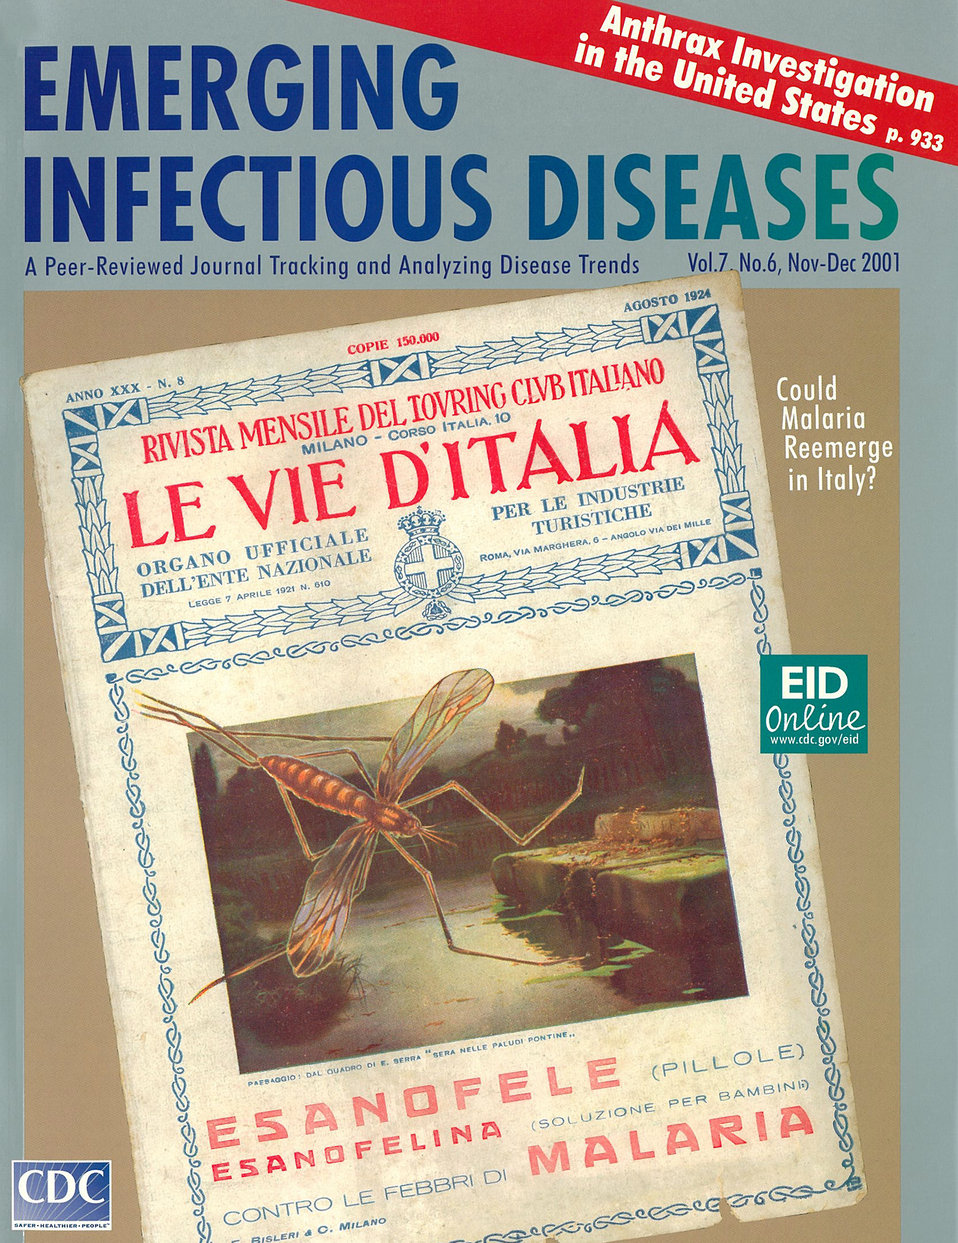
Emerging Infectious Diseases (EID) cover artwork for Volume 7, Number 6, November-December 2001 issue.